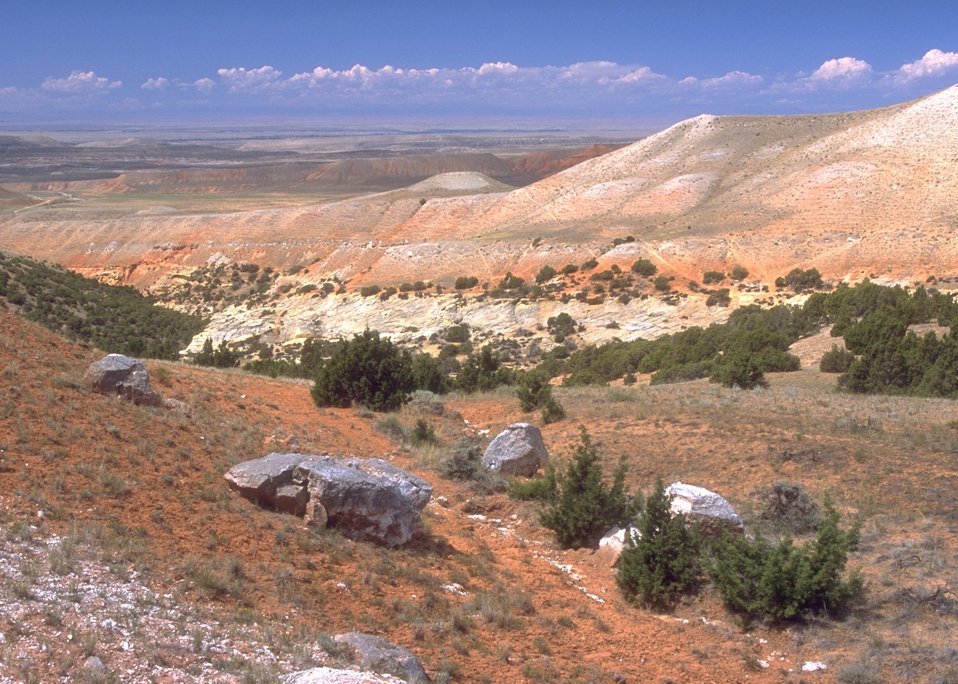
View along the Red Gulch/Alkali Back Country Byway, Worland Field Office.